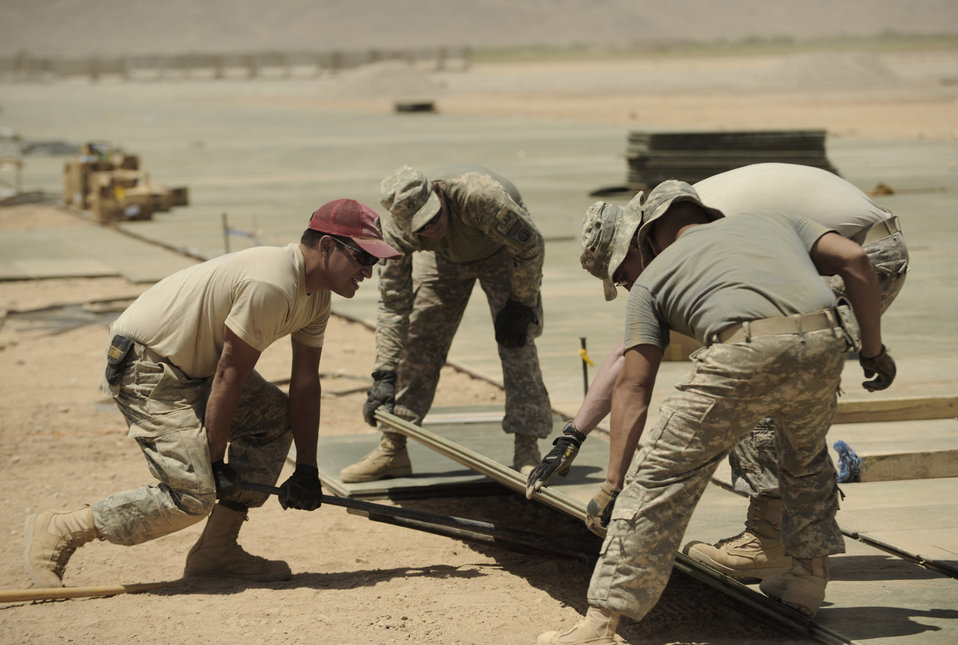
RED HORSE team serves as 'backbone' of Afghanistan construction

Staff Sgt. Michael Zamora (left) uses a pry bar to set AN2 matting while members of the 82nd Airborne from Fort Bragg, N.C. work the matting in place May 17 at Kandahar Airfield, Afghanistan. The ramp will be used to bed down combat aviation brigade helicopter units. Sergeant Zamora is an 819th Expeditionary RED HORSE Squadron civil engineer electrician.